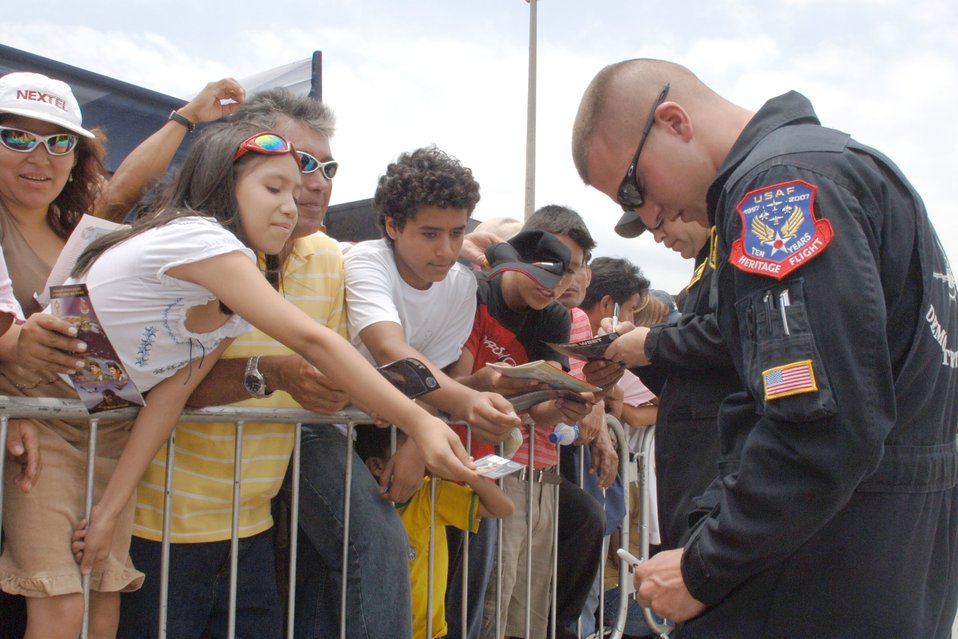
Airmen kick off part two of Falcon Condor 2007

Senior Airman Arthur Greene autographs air show memorabilia Feb. 17 during Falcon Condor 2007, joint air show in Lima, Peru. The air show directly supports the U.S. Southern Command's engagement goals and furthers relations between allied nations. Airman Greene is a crew chief with the Air Combat Command's Viper West Demonstration Team.